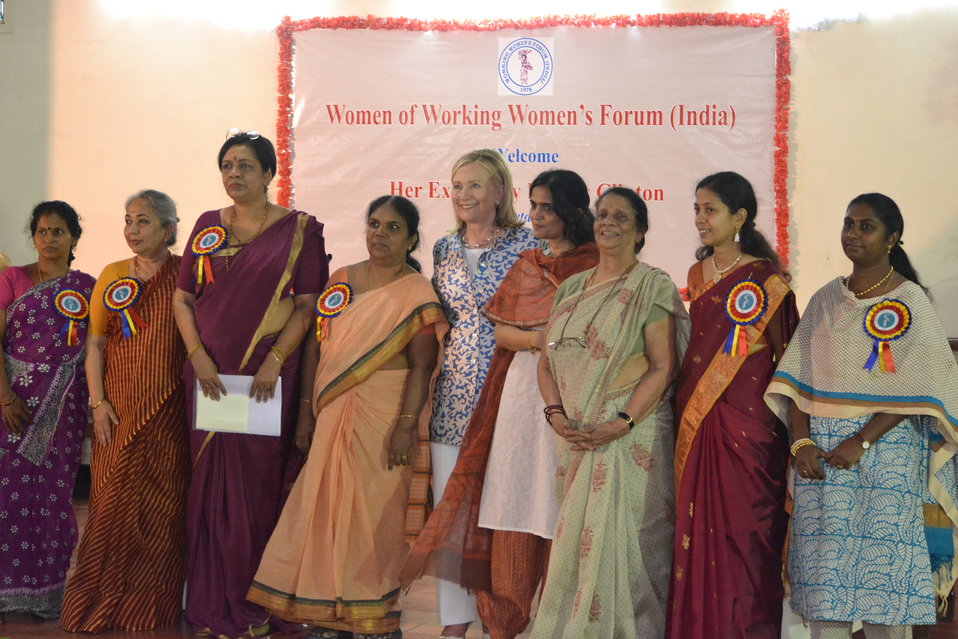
Secretary Clinton and Jaya Arunachalam Pose for a Photo With Workin Women’s Forum Honorees

U.S. Secretary of State Hillary Rodham Clinton and Working Women’s Forum Founder Jaya Arunachalam pose for a photo with honorees of the Working Women’s Forum in Chennai, India, on July 20, 2011. [Paul Cohn/ State Department photo]